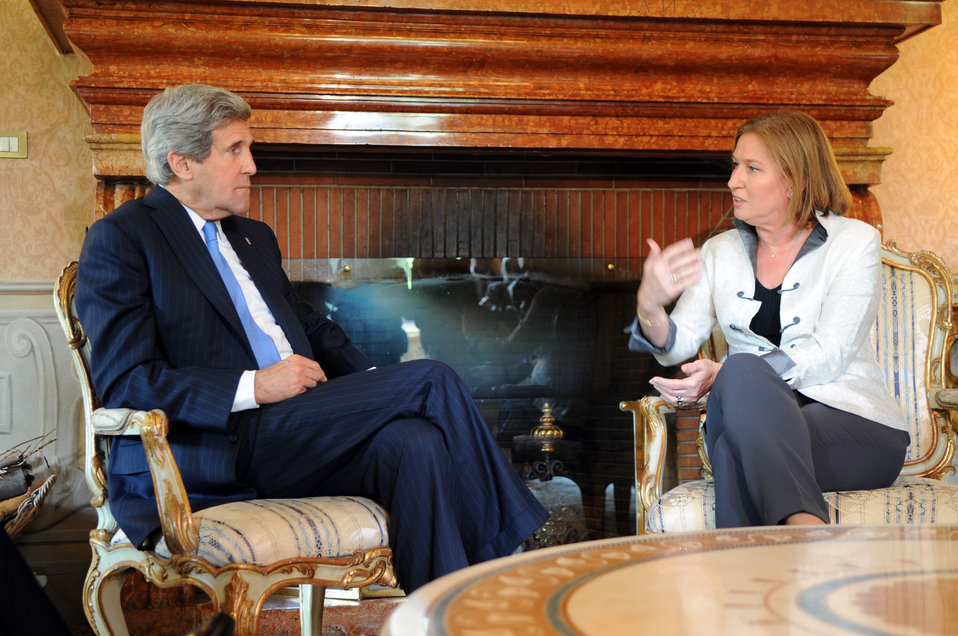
Secretary Kerry Meets With Israeli Justice Minister Livni

U.S. Secretary of State John Kerry meets with Israeli Justice Minister Tzipi Livni at the U.S. ambassador's residence, the Villa Taverna, in Rome, Italy, on May 8, 2013.